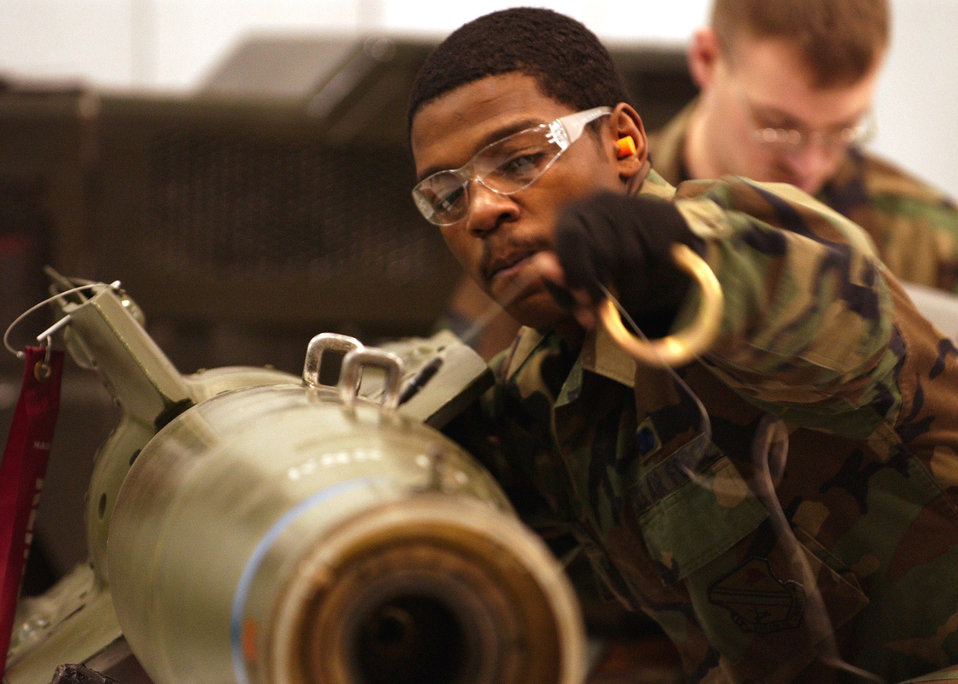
Competing for load crew honors

Senior Airman Keitric King installs the fuse intiator that arms the guided bomb unit 12 that will be loaded onto an A-10 Thunderbolt II for the Weapons Standardization Load Crew of the Year Competition Jan. 11 at Eielson Air Force Base, Alaska. The competition evaluates technical proficiency, safety procedures and overall time. The 355th AMU's overall time was 50 minutes and 17 seconds. Airman King is assigned to the 355th AMU.